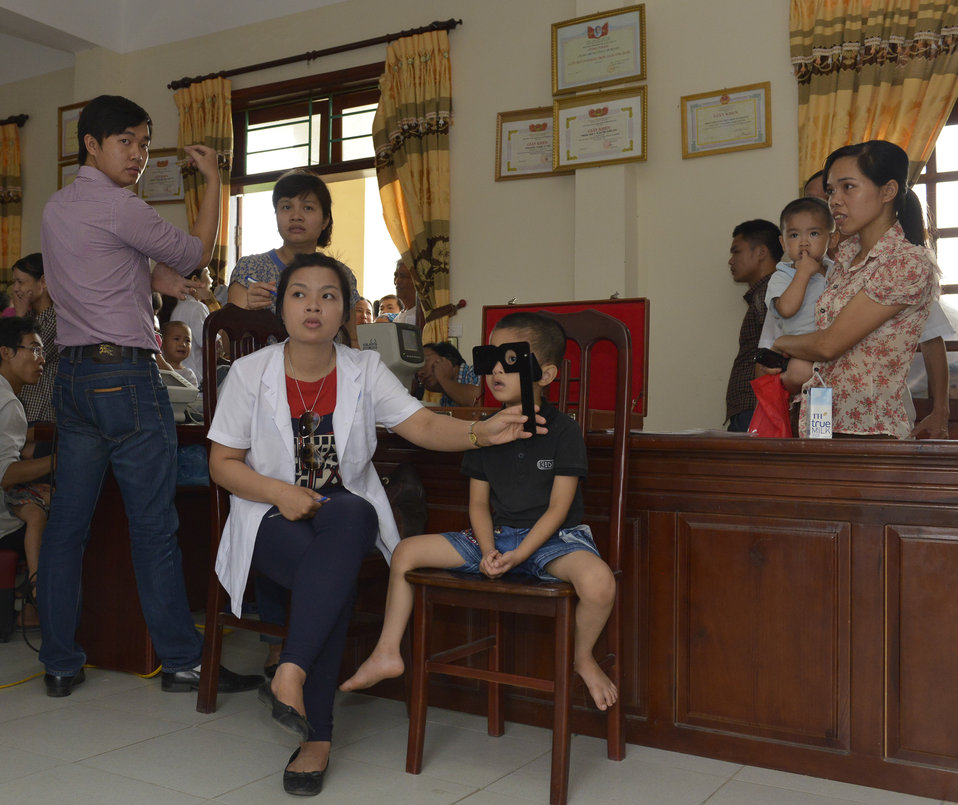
Eye screening for kindergarten children in Quoc Oai district of Hanoi

Quoc Oai, Hanoi. May 31, 2014.